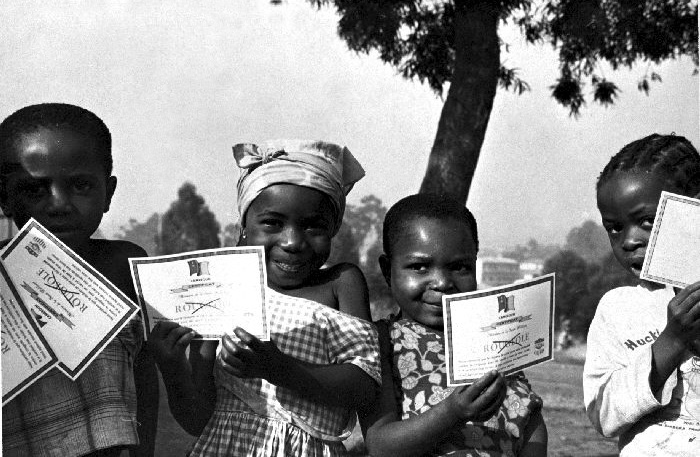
Children of Cameroon with their vaccination certificates after having been vaccinated against smallpox.